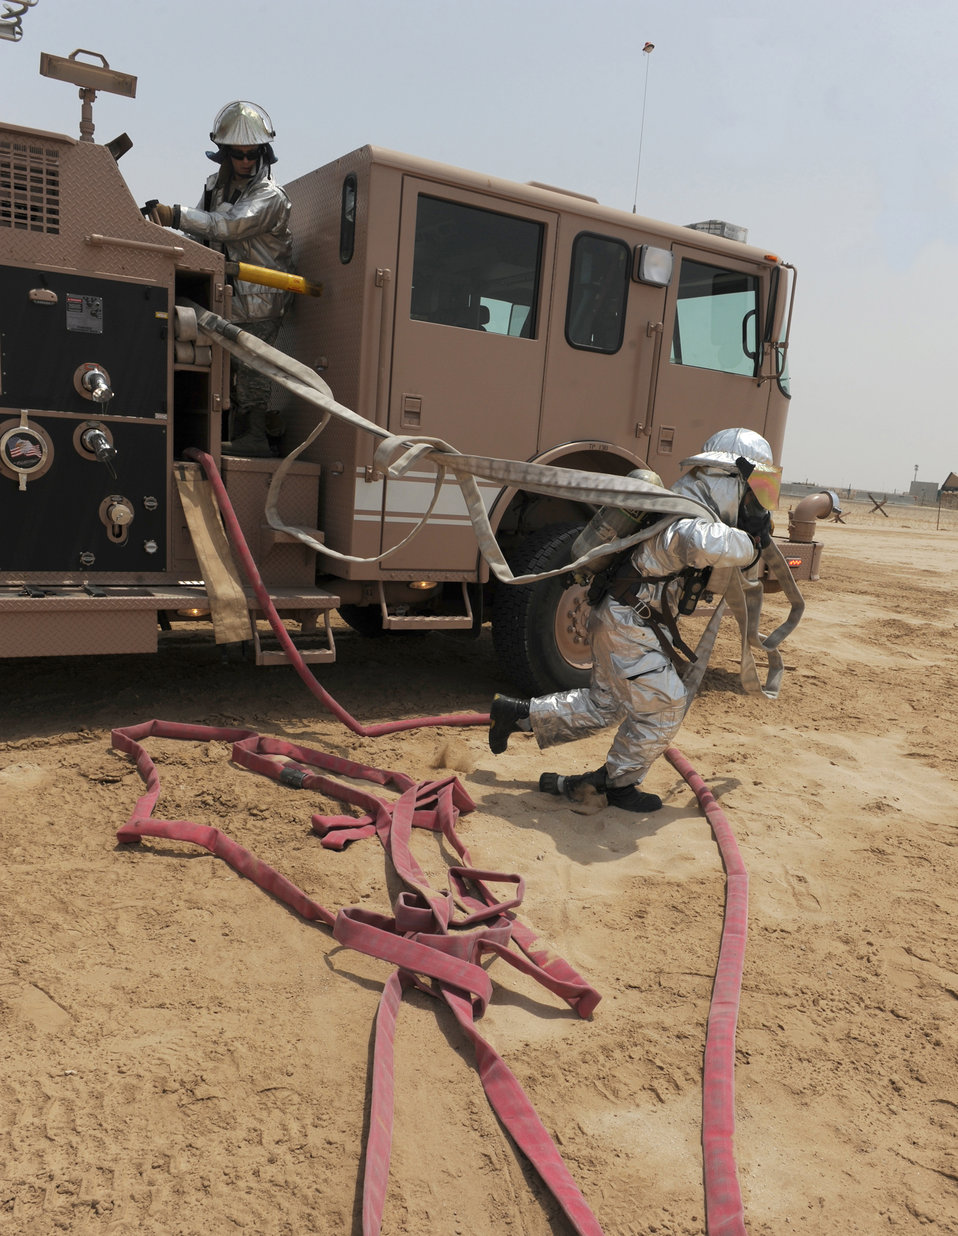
Fighting fire

Firefighters assigned to the 380th Civil Engineer Squadron participate in a joint-training exercise with firefighters from the 3rd Battalion, 4th Air Defense Artillery Regiment July 15, 2011, in Southwest Asia. The exercise aimed to teach the firefighters to learn how to effectively work together during an emergency situation.